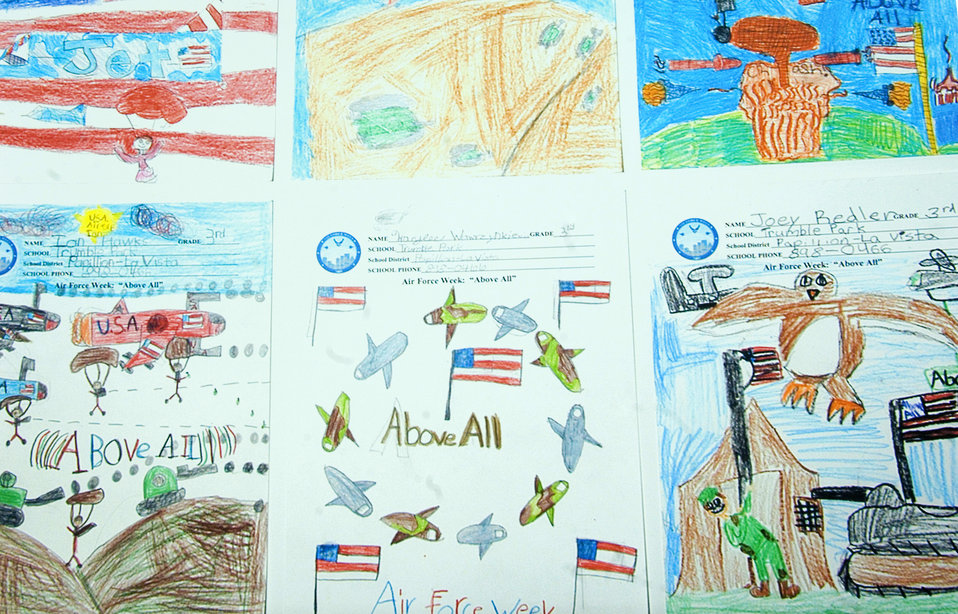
Air Force Week mixes past, present, future at museum

Elementary students from the local community display their submissions for a special Air Force Week design contest exhibited at Air Force Week in the Heartland Aug. 13 at the Strategic Air and Space Museum in Ashland, Neb. Museum officials hosted a day dedicated to the legacy of airpower providing special Air Force demonstration teams and displays.